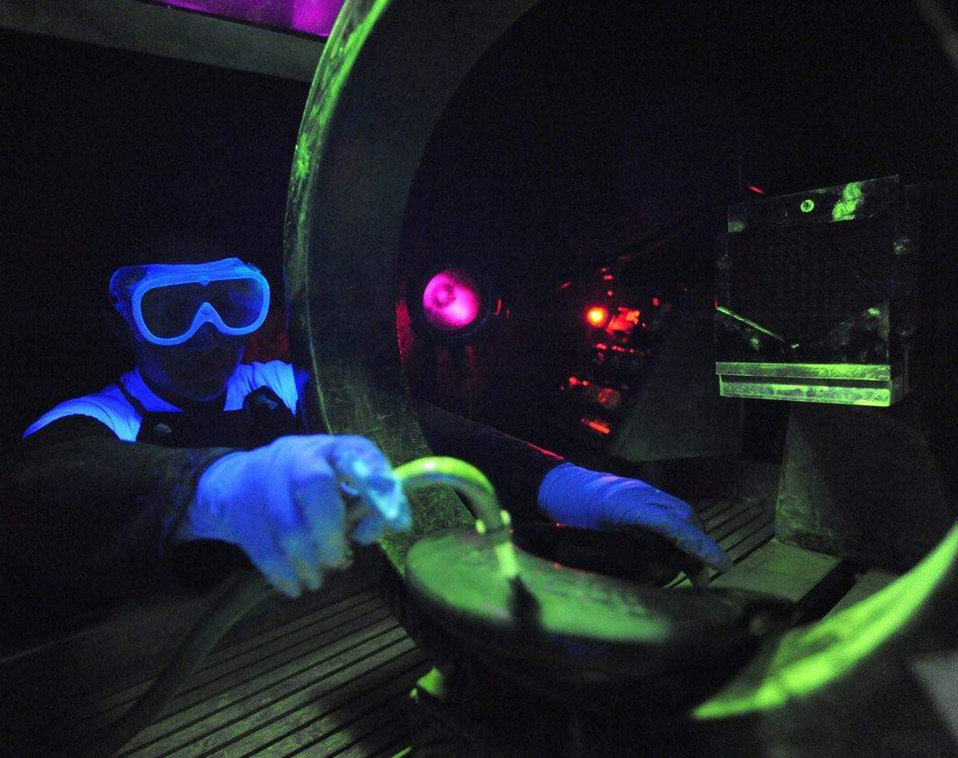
Photo essay: Taking a closer look

Senior Airman Lilia Linares uses a fluorescent magnetic particle process to inspect an aerospace ground equipment hook for cracks May 27 at Charleston Air Force Base, S.C. The nondestructive inspection section inspects more than 40,000 pieces of weapon systems and nonweapon systems assets a year. Airman Linares is a nondestructive inspection journeyman with the 437th Maintenance Squadron.